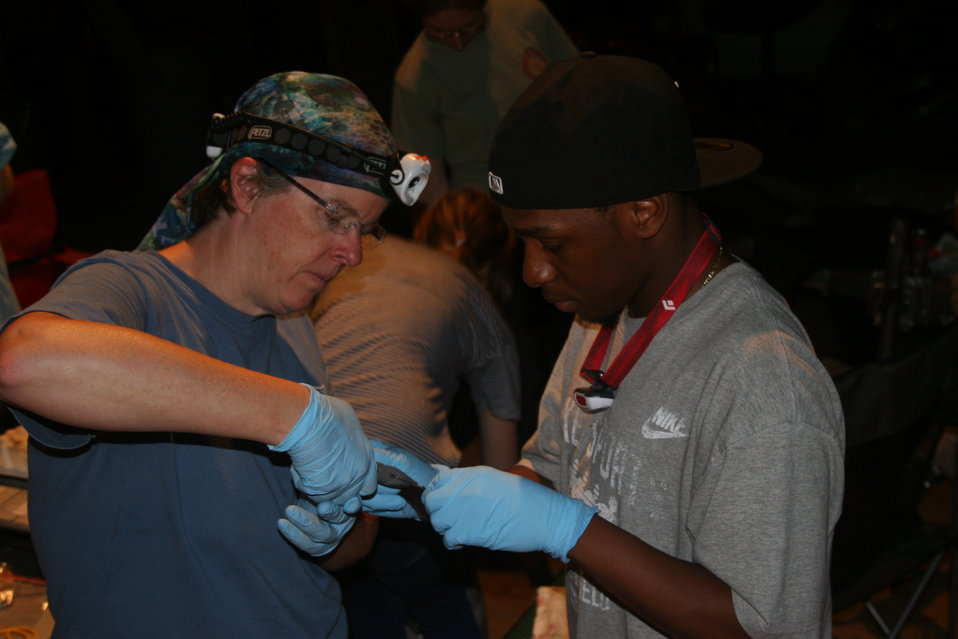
Biologist and tech applying wing band

NH Fish and Game Department biologist Emily Burnkhurst and Boston University technician Leon Spencer apply wing band to little brown bat.